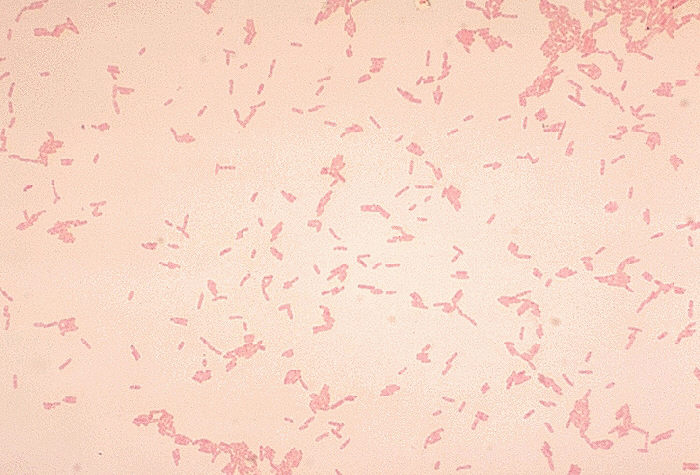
Alcaligenes denitrificans. Gram stain.